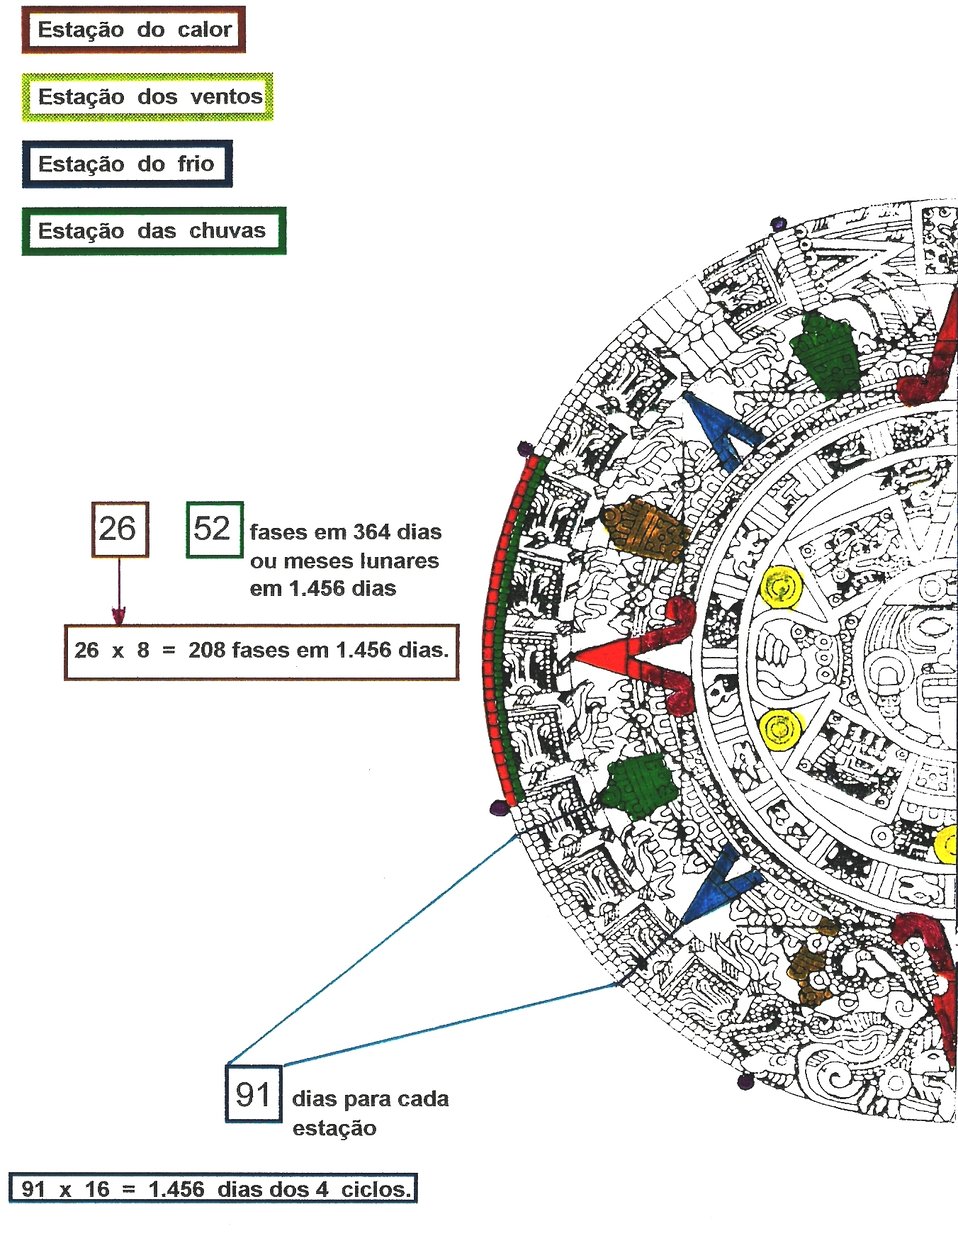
Português: Desenho em tinta nanquim. Cópia da fotografia original da Pedra do Calendário Solar. Indian ink drawing. Copy of the original picture of the Aztec calendar.